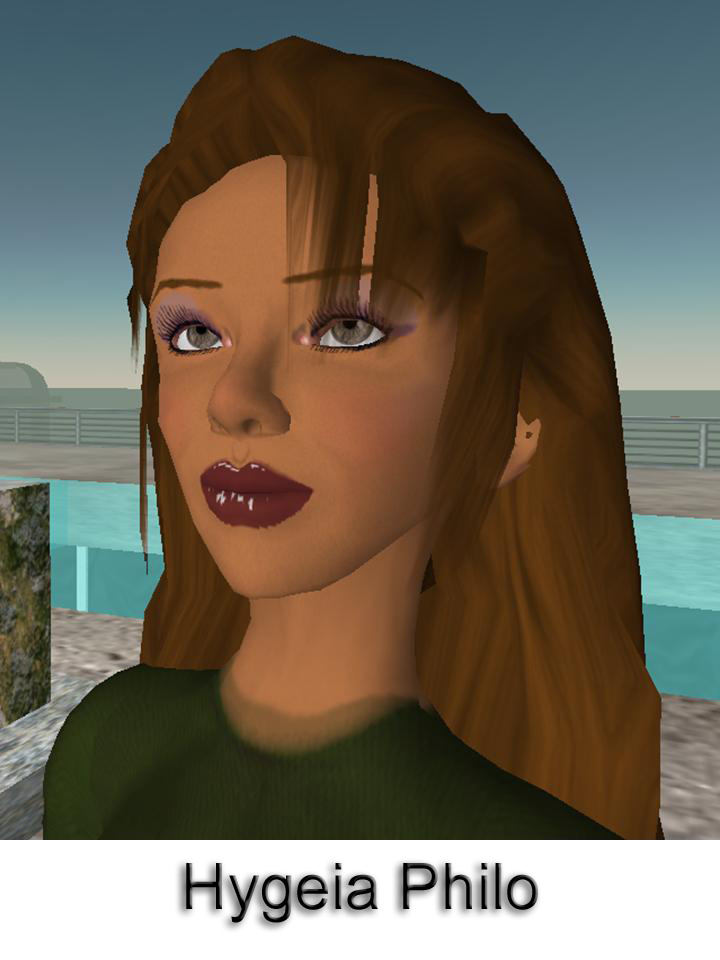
This computer-generated image depicts Hygeia Philo, the CDC's lead avatar in the virtual world of Second Life. This is the first design-stage of the avatar. She was metaphorically 'born' on July 13, 2006, coinciding with the 60th anniversary of CDC. Dr. John Anderton designed Hygeia Philo, whose name is based on the Greek meaning 'lover of health', to be the modern muse of health to serve as lead health spokesperson, and health educator in this new virtual space. See PHIL 10002, 10005, 10008, 10009, 10011, 10012, 10013, 10014, 10015, and 10016 for additional images of Ms. Philo.